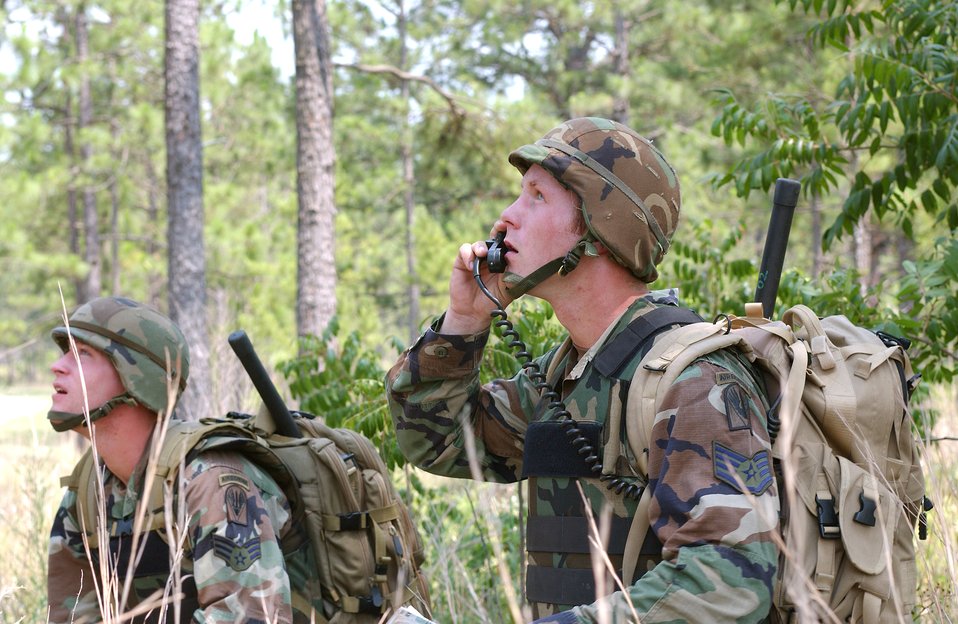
Air Warrior transforms into new Green Flag

Staff Sgt. Dan Kovarik (right) and Senior Airman Joshua Cullins guide an A-10 Thunderbolt II onto a target during a live-fire portion of Air Warrior II at Fort Polk, La., in June 2005. The Air Warrior exercises, now known as Green Flag, have officially become the Air Force's premier pre-deployment exercises for Air Combat Command flying units who perform close-air support and precision-guided munitions delivery.